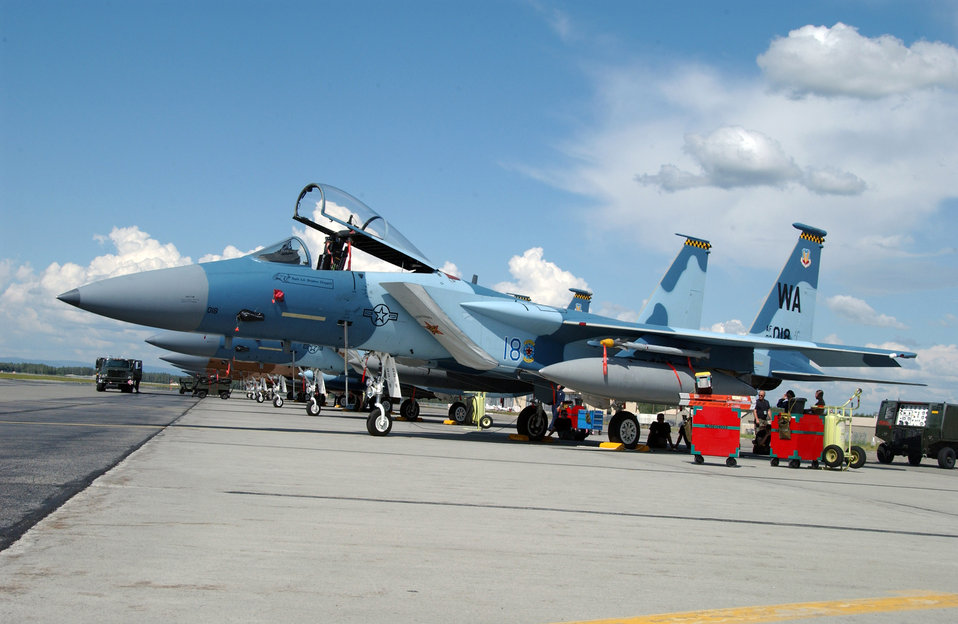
Red Flag-Alaska 07-3

An F-15 Eagle from the 65th Aggressor Squadron at Nellis Air Force Base, Nev., sits parked on the Eielson AFB, Alaska, flight line July 9. The 65th AGS is taking part in Red Flag-Alaska 07-3, a multi-service, multi-platform coordinated, combat operations exercise, which runs through the July 27.